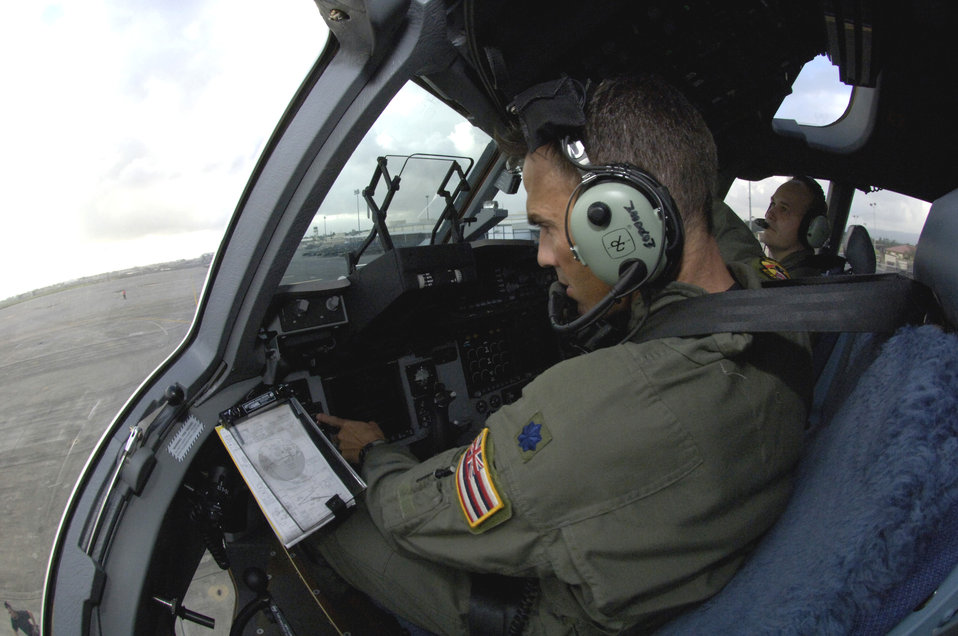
C-17s deliver relief to Kauai

Lt. Col. Woody Woodrow and Maj. Matt Zehr conduct preflight checks on their C-17 Globemaster III Thursday, March 16, 2006, at Hickam Air Force Base, Hawaii. The C-17 delivered recovery equipment to the island of Kauai, Hawaii, after a dam burst, isolating thousands of people along the island's north shore. Colonel Woodrow is with the Hawaii Air National Guard's 204th Airlift Squadron and Major Zehr is with the 535th Airlift Squadron.